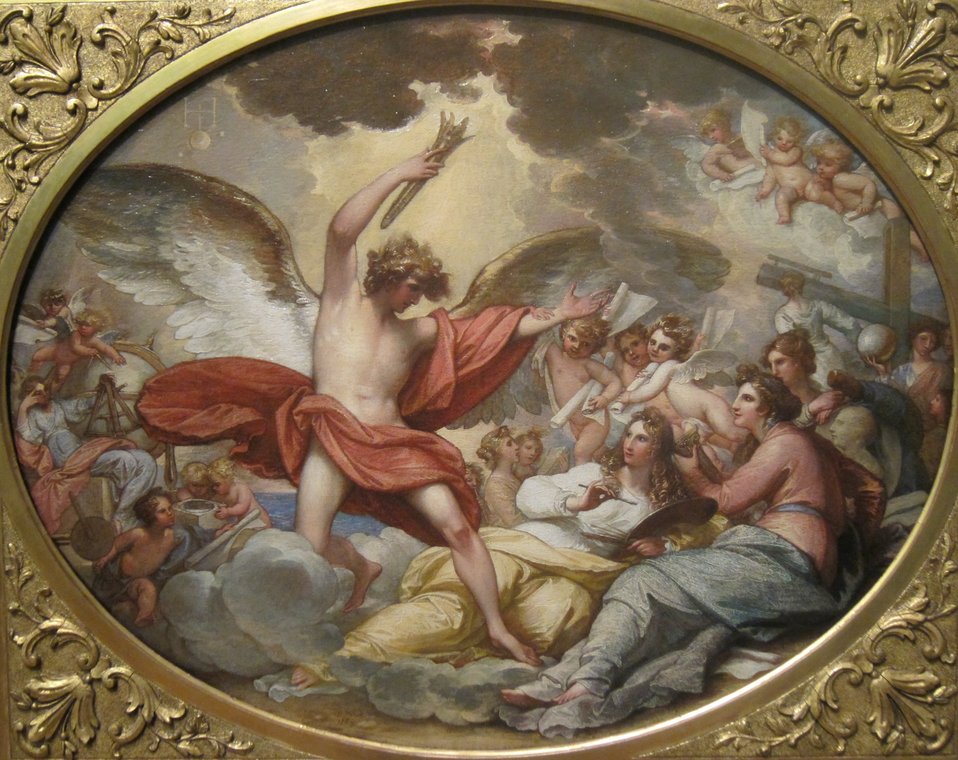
'Genius Calling Forth the Fine Arts to Adorn Manufactures and Commerce' by Benjamin West